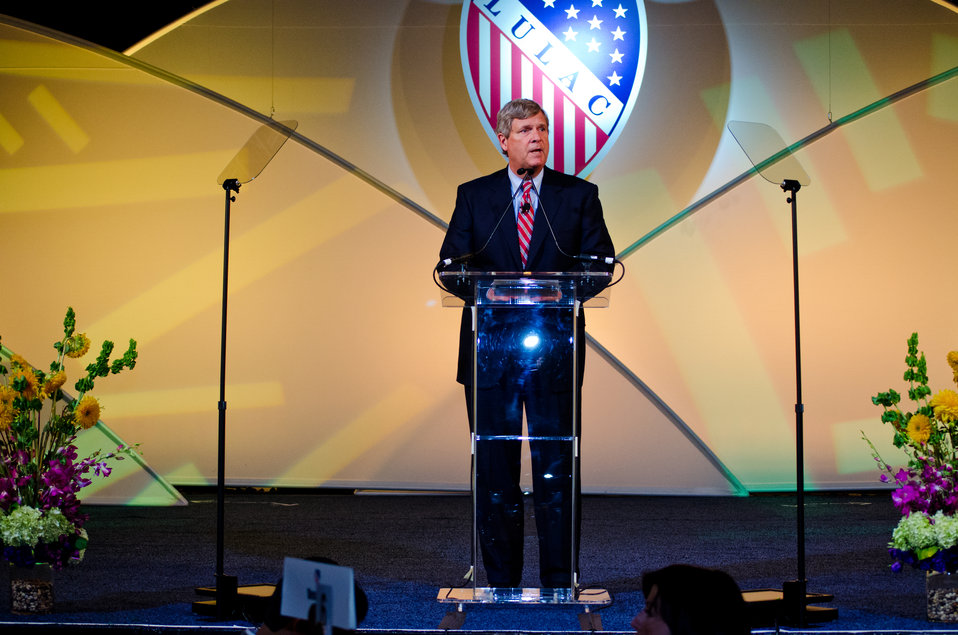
Agriculture Secretary Tom Vilsack speaks at the 84th Annual League of United Latin American Citizens (LULAC) National Convention and Exposition in Las Vegas, NV on Wednesday, Jun. 20, 2013.